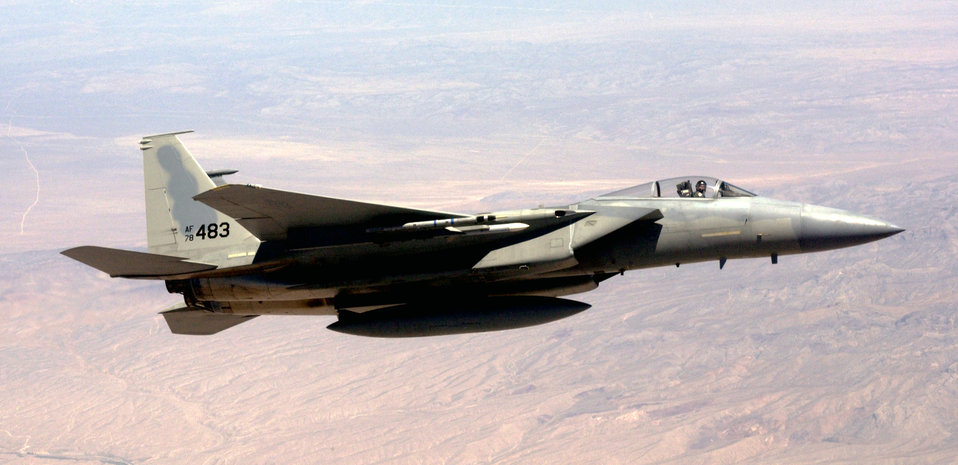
Desert Eagle

NELLIS AIR FORCE BASE, Nev. -- An F-15C flies over the desert during a mission on June 2. The Eagle is participating in the U.S. Air Force Weapons Schools Mission Employment Exercise. The exercise is a two-week battle simulation, bringing all the various weapon schools from around the country to Nevada, testing the skills students learned over several months of training.